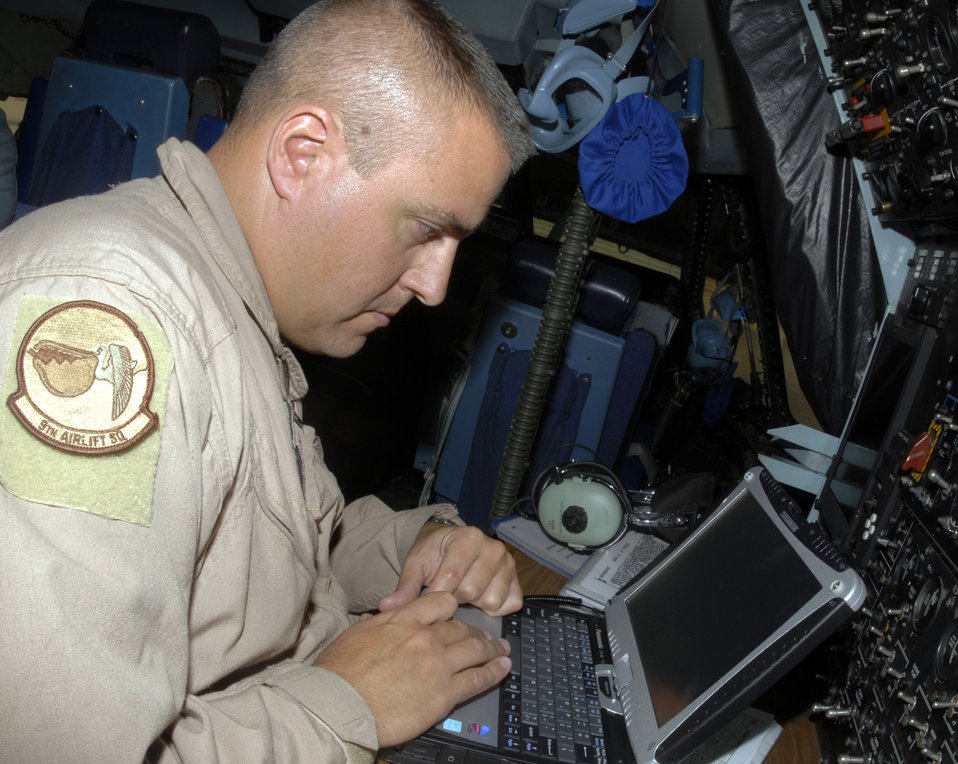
Heavy lifters

Tech. Sgt. Jeff Seren computes takeoff and landing data Sept. 26 in the cockpit of a C-5 Galaxy cargo aircraft at Joint Base Balad, Iraq. The C-5 is assigned to the 436th Airlift Wing at Dover Air Force Base, Del. Sergeant Seren is a flight engineer assigned to the 9th Airlift Squadron at Dover AFB.